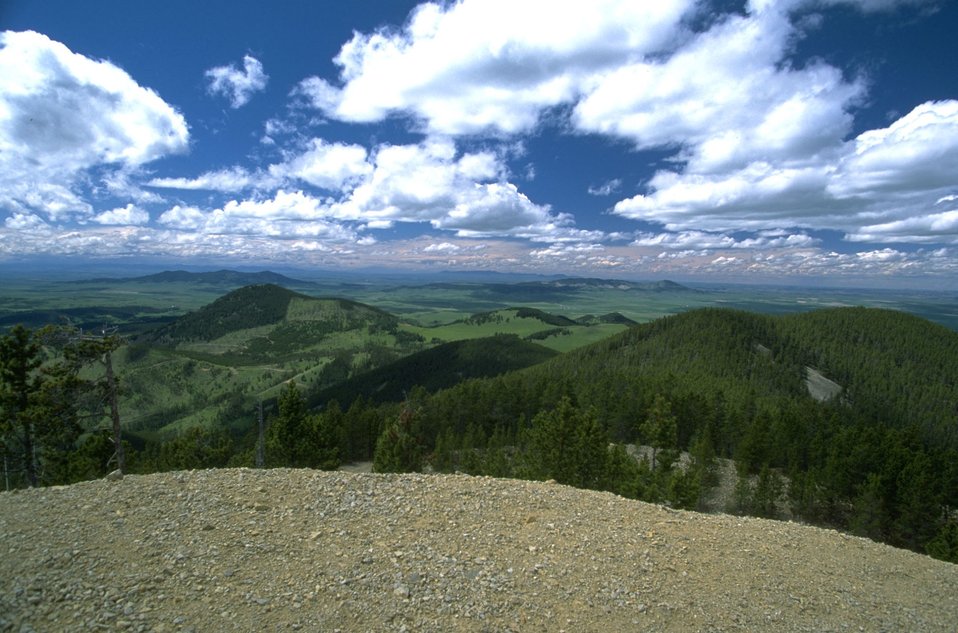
Large clouds over grassy hills